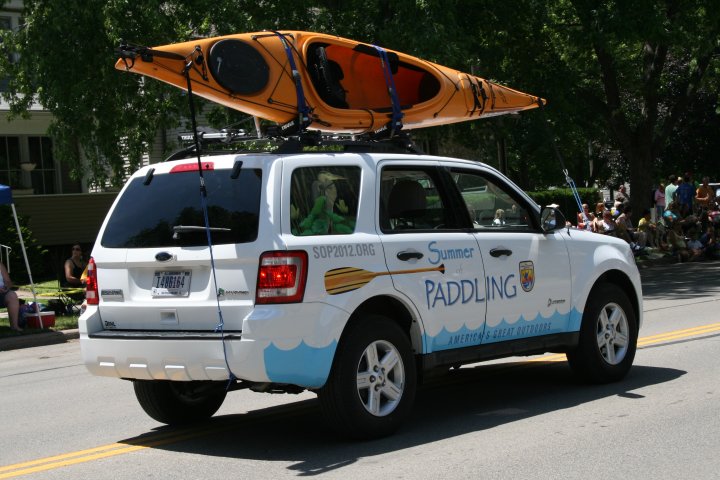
resize the SOP vehicle

The Summer of Paddling official vehicle.